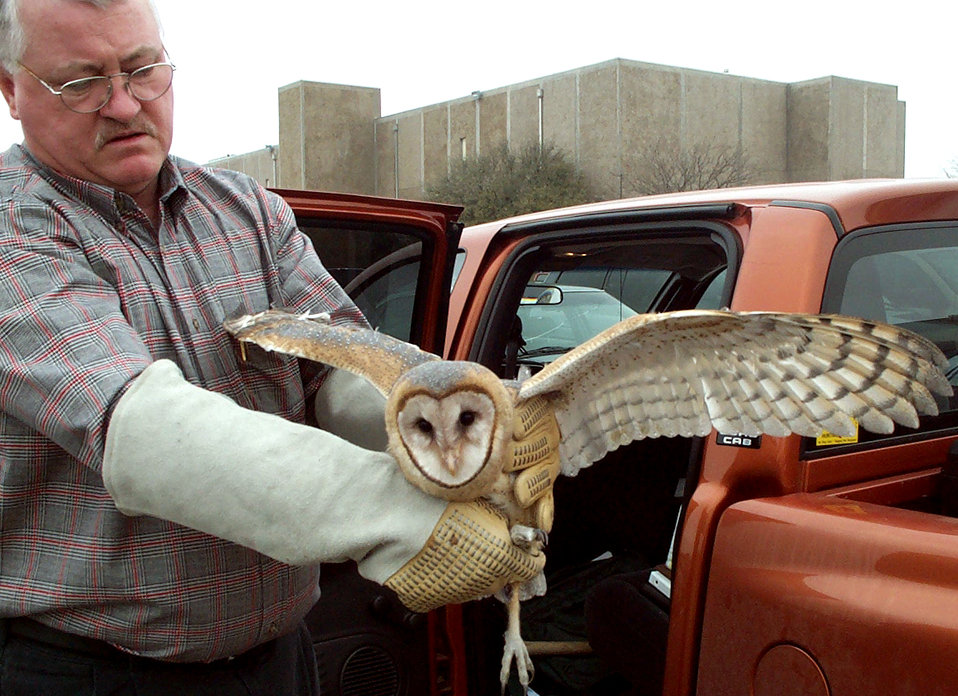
Catch and release

SHEPPARD AIR FORCE BASE, Texas -- Tim Hunter, an 82nd Civil Engineer Squadron agronomist, handles a barn owl that was found in hangar. The owl was released 25 miles away from the base into a more suitable and safer environment.